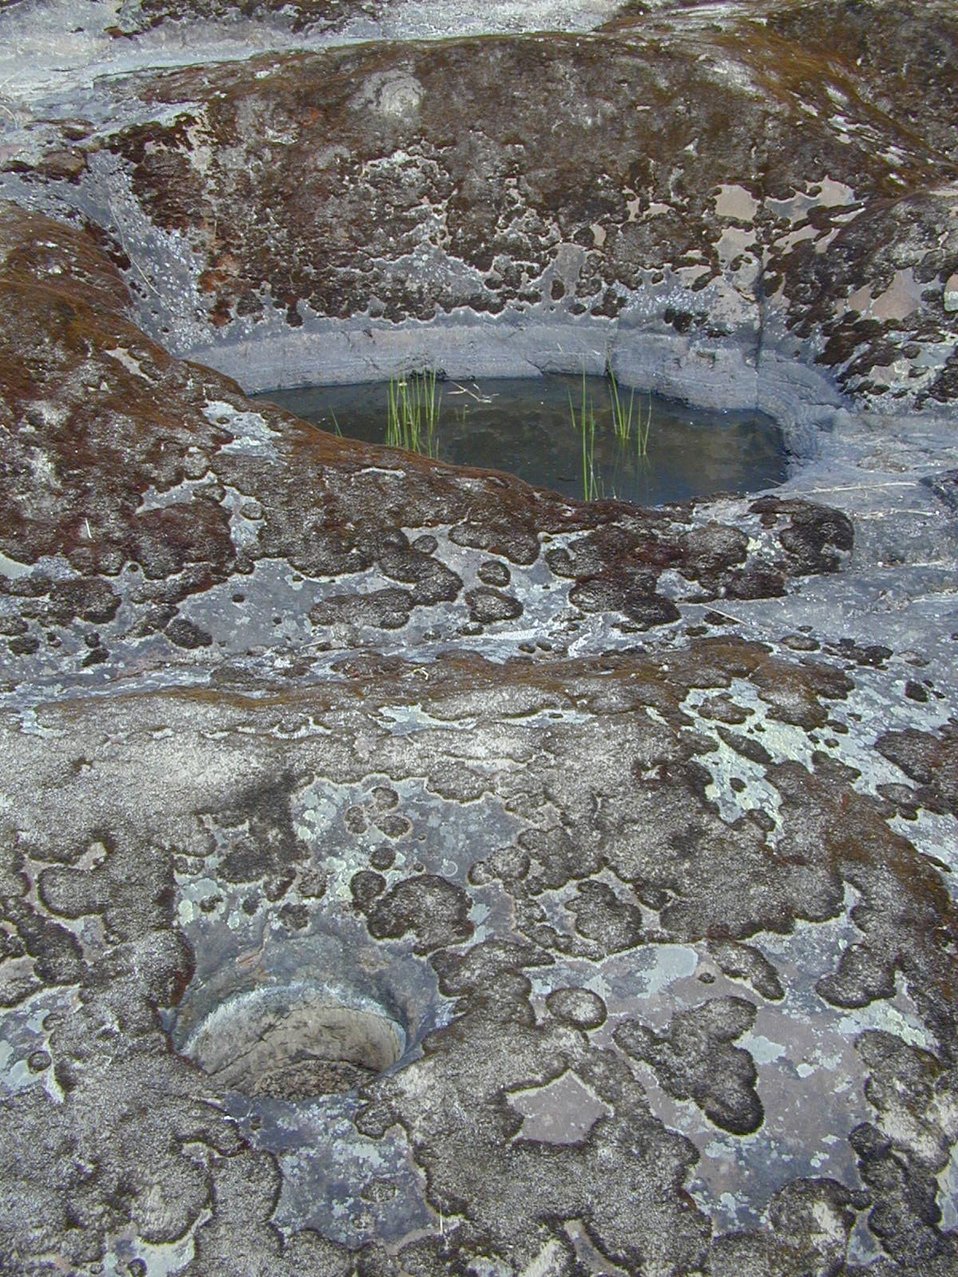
Rock pothole along the Lower Salmon River Cottonwood Field Office UCSC Upper Columbia Salmon Clearwater District